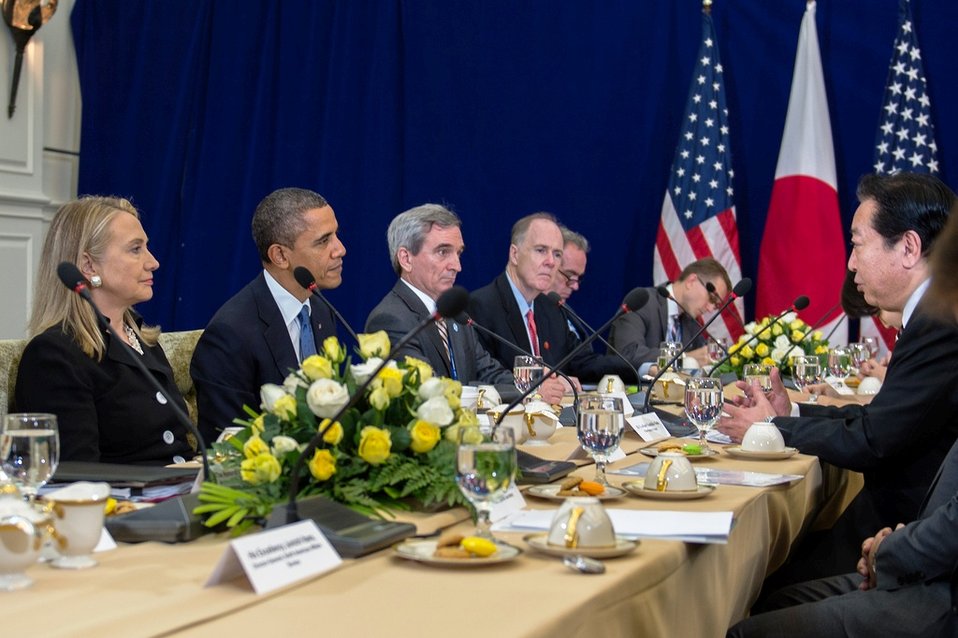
President Obama and Secretary Clinton Meet With Japanese Prime Minister Yoda

U.S. President Barack Obama and U.S. Secretary of State Hillary Rodham Clinton meet with Japanese Prime Minister Yoshihiko Noda for a bilateral meeting during the East Asia Summit at the Peace Palace in Phnom Penh, Cambodia, November 20, 2012. President Obama is the first U.S. President to visit Cambodia.